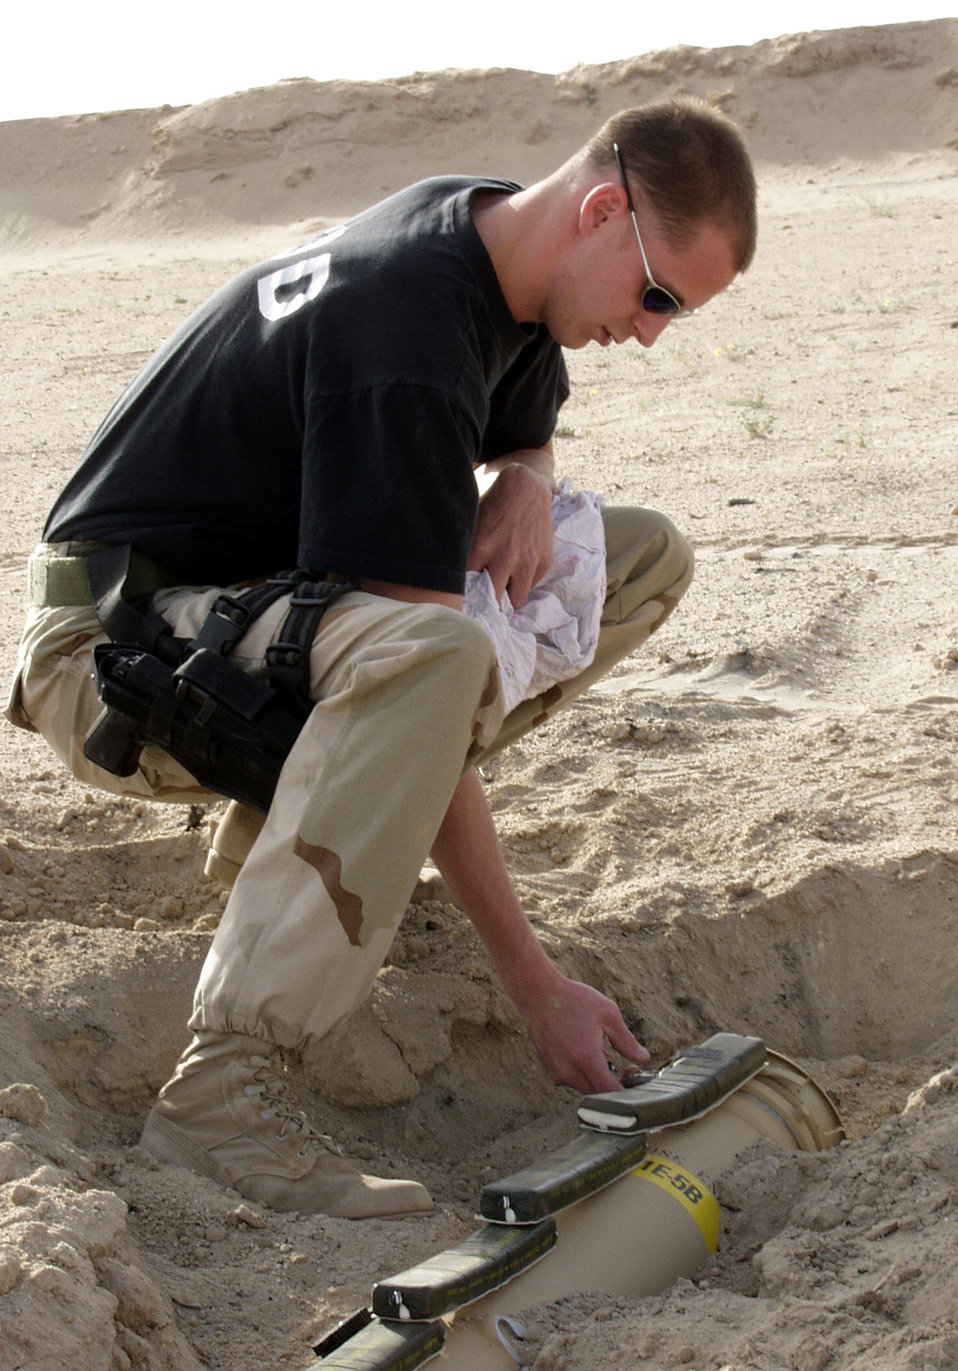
Disposing munition

OPERATION IRAQI FREEDOM -- Staff Sgt. Ryan Hoffman prepares to dispose of a missile system and unserviceable munitions by using C4 explosive. Hoffman is an explosive ordnance disposal technician with the 386th EOD team at a forward-deployed location.